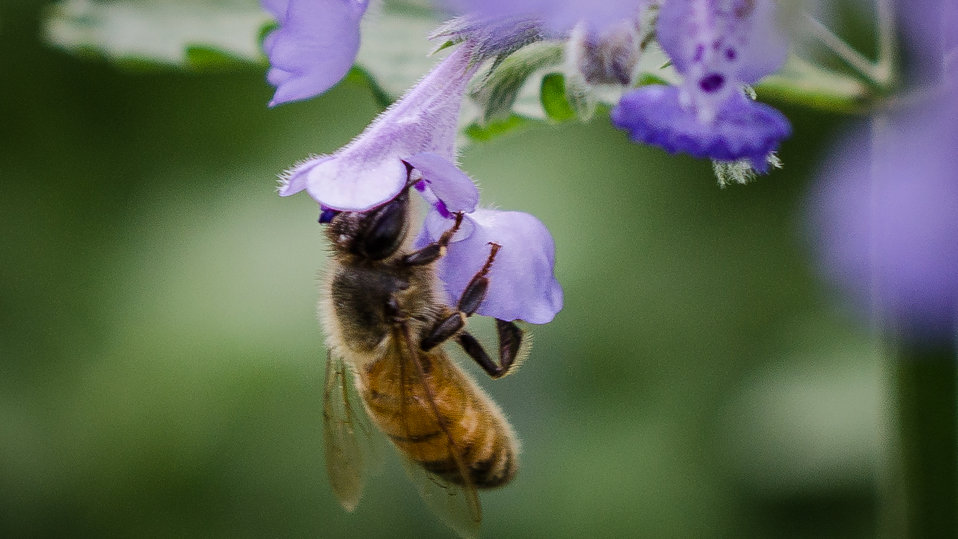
A honey bee is attracted to flowers in the U.S. Department of Agriculture People's Garden, outside the headquarters' Whitten Building in Washington, D.C., on Tuesday, May 21, 2013.This flower attracts bees because it provides nectar for the hive to feed on. Other plant in the garden have pollen that other bees will feed on. The bees gather pollen from many flowers and aide in pollination by moving from plant to plant.